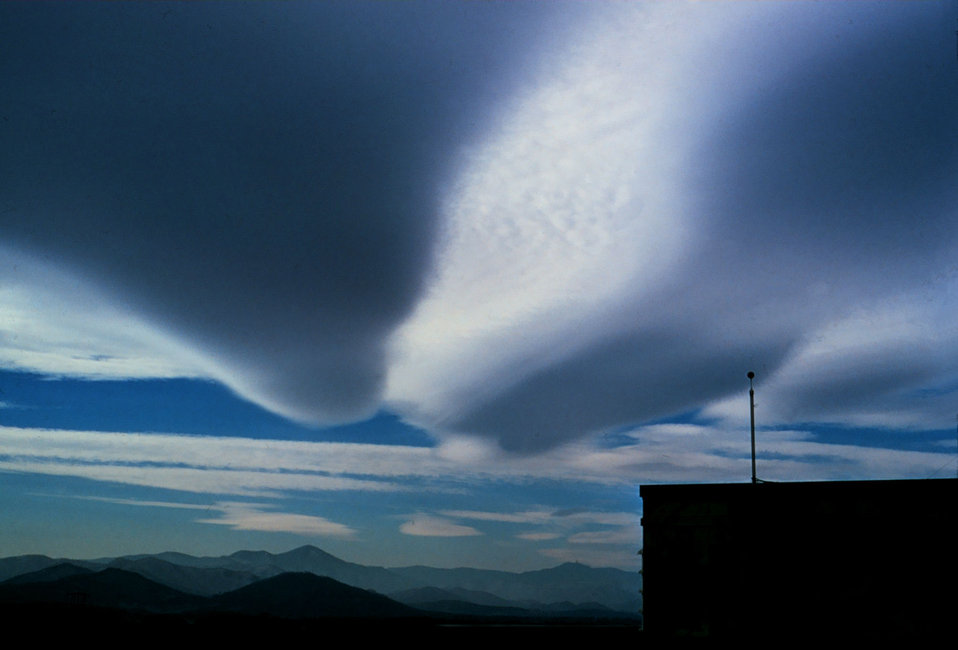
Elongated wave cloud